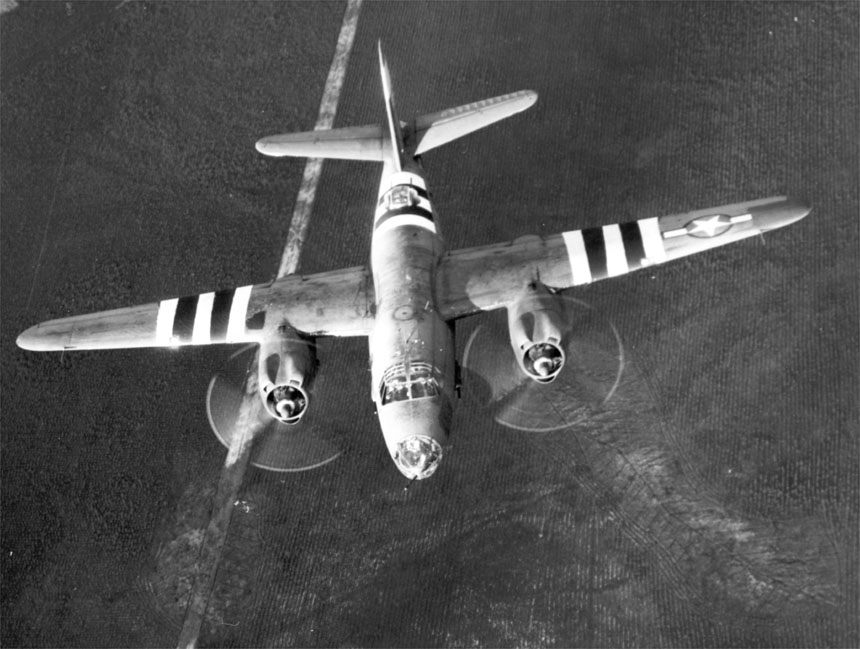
B-26 with D-Day invasion stripes

A B-26 Marauder flies with invasion stripes for D-Day.